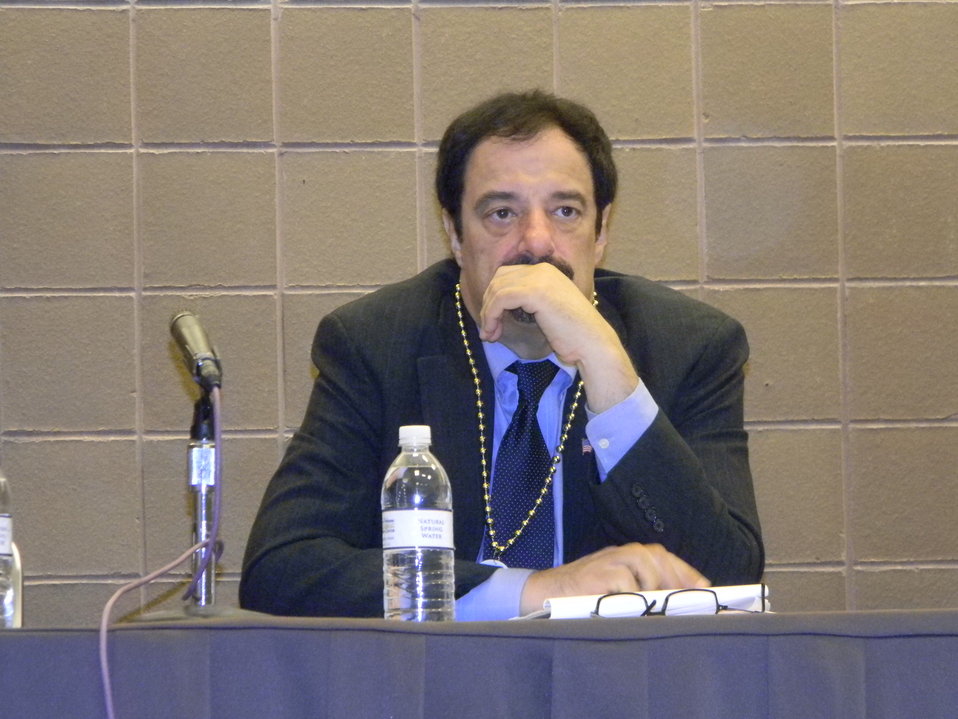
2012 National Urban League Conference

David Honig, President and Executive Director
Minority Media & Telecommunications Council serving as a panelist on the the Job Creation and Education: Programmatic Efforts to Increase Broadband Adoption in African American Communities panel.